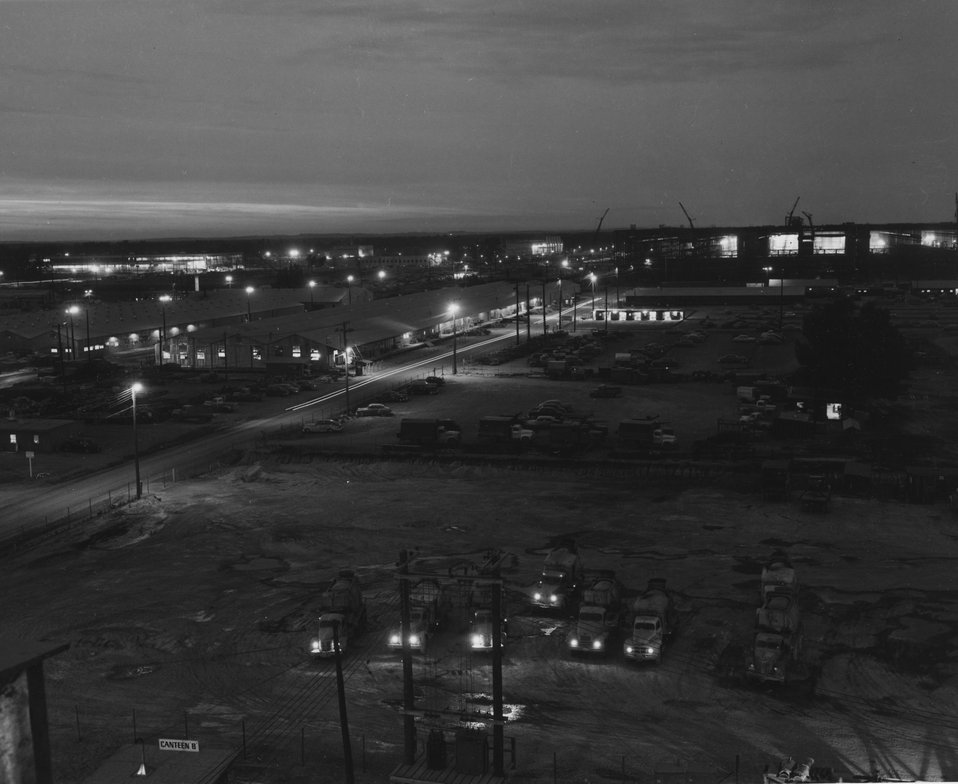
Paducah Area-Night view plant construction. c. 1952